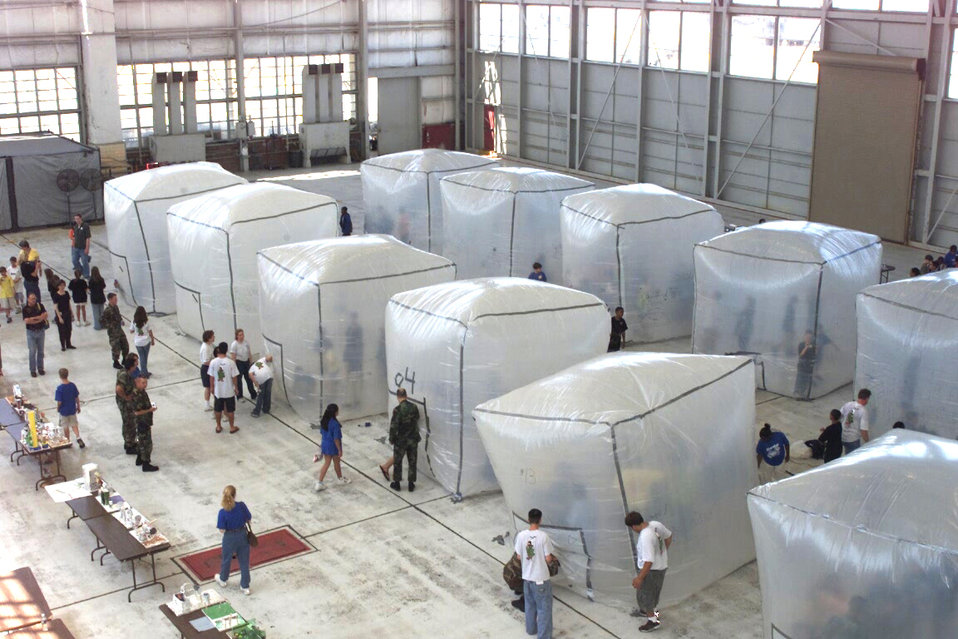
Martian living

EGLIN AIR FORCE BASE, Fla. -- A hangar here sprouts space habitats as more than 250 local fifth-graders prepare to embark on a simulated trip to Mars. The students planned their space habitats during six weeks of study about space, particularly Mars. The students spent the first half of the field trip constructing their cells, which are made of thick plastic sheets taped together and inflated by fans. Once they finished, the teams entered their habitats to eat lunch -- only 22 ounces of food per astronaut -- and discuss key considerations of living on Mars, including communication, food, waste, transportation, air use and recreation.